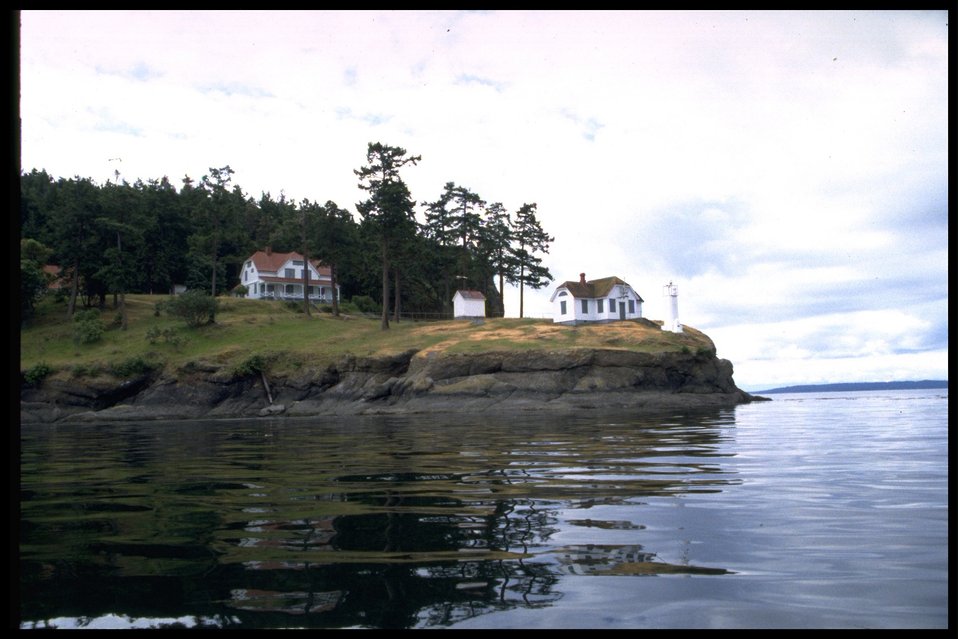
Turn Point from water with light station and buildings. Series of 17 photos.